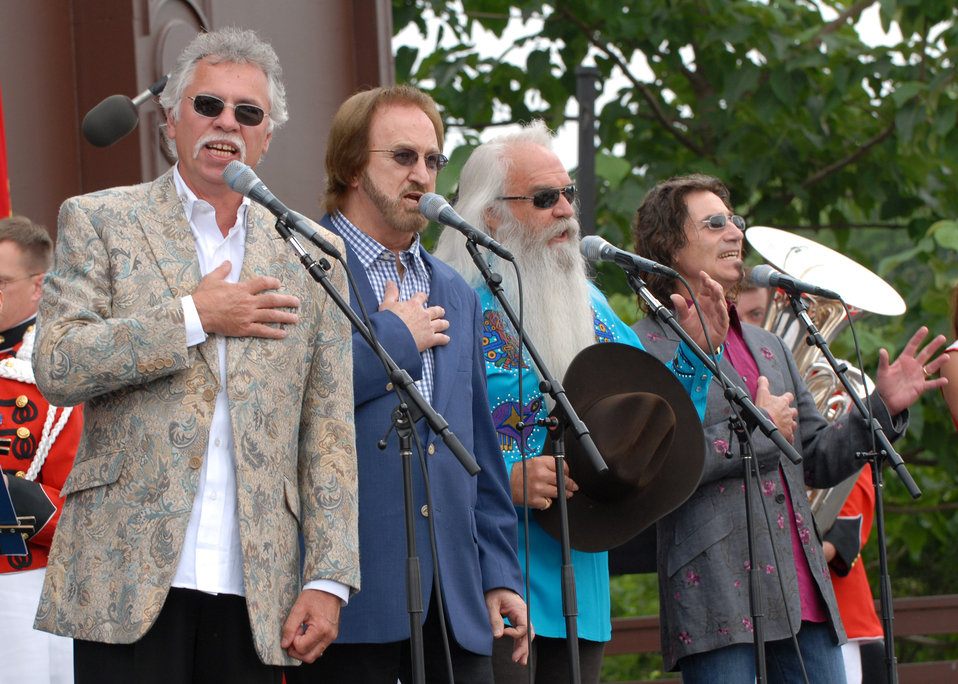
National Anthem Project concludes

Country music's Oak Ridge Boys lead the singing of the national anthem June 14 during the National Association for Music Education's National Anthem Project grand finale at the Washington Monument on Flag Day. The project is a multiyear effort to re-teach Americans